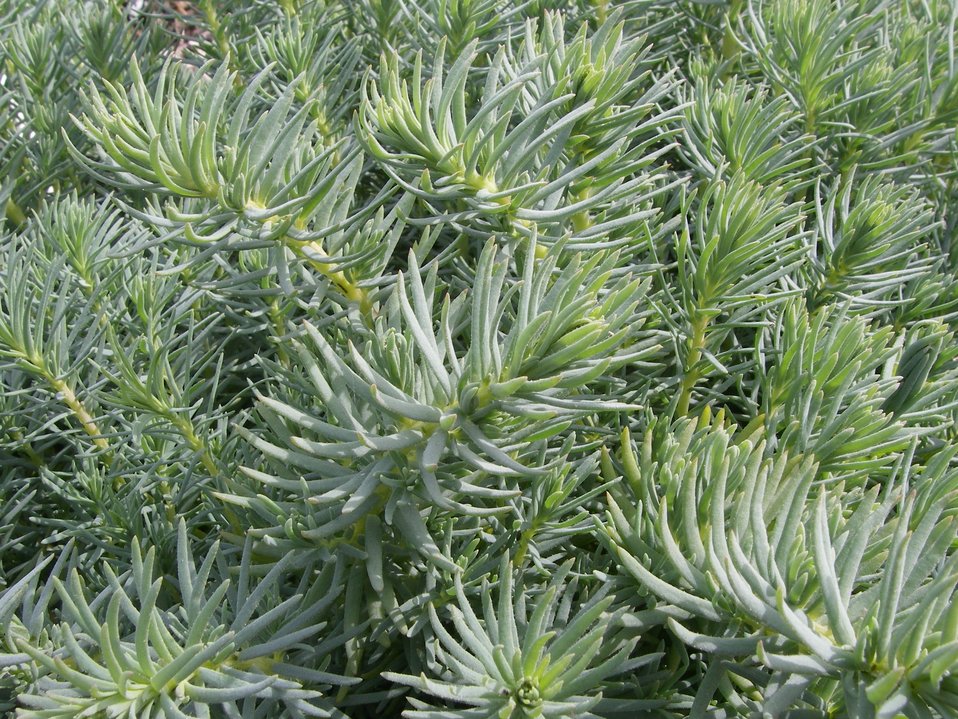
California sea-blite by Valary Bloom-USFWS